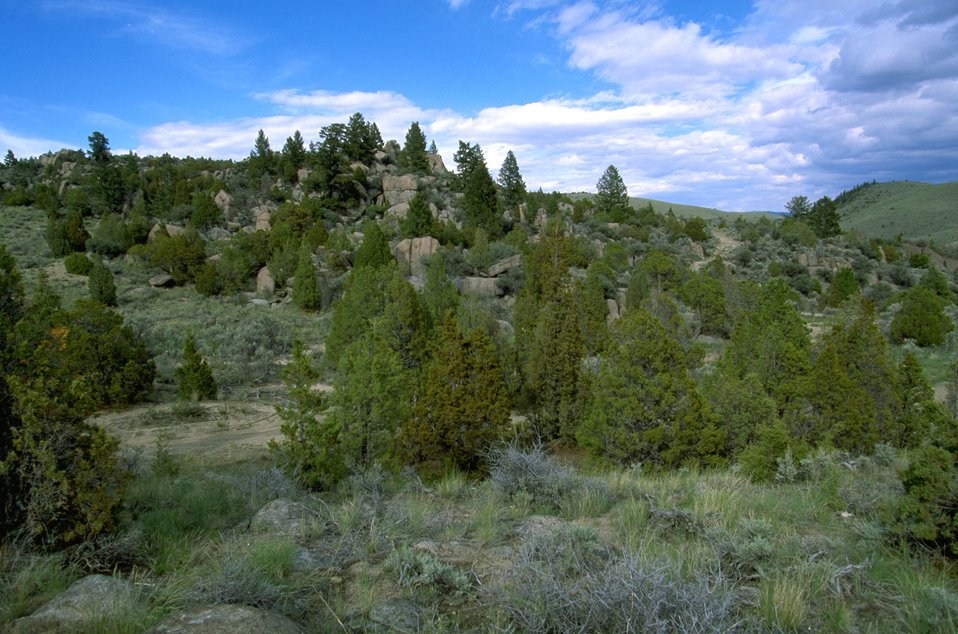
Rock formations and Junipers in the Pipestone Hills area